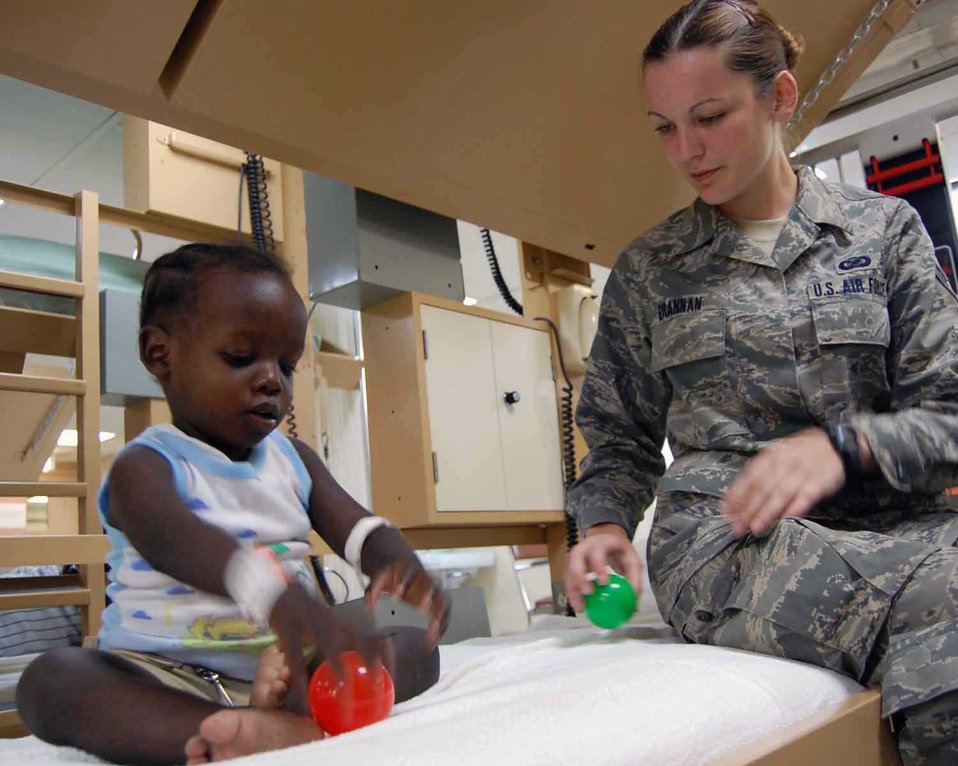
Continuing Promise 09

Airman 1st Class Danielle Grannin plays with Haitian child as he awaits surgery in the patient care ward April 12 aboard the hospital ship USNS Comfort. The Comfort, currently anchored off the shore of Port-Au-Prince, Haiti, is deployed on a four month humanitarian and civic assistance mission to Latin America and the Caribbean area.